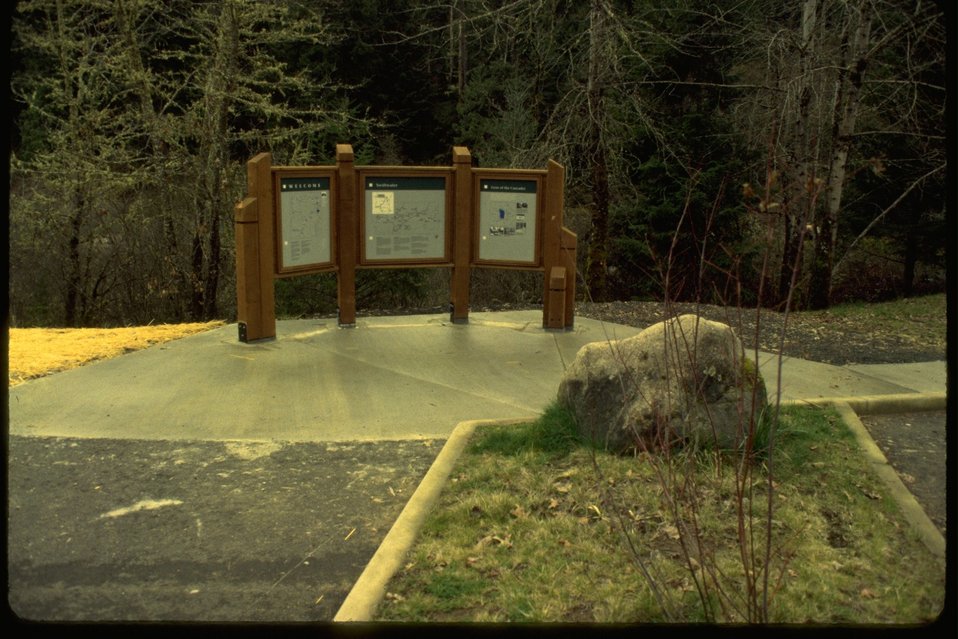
Wayside interpretive panels, mounted on a kiosk.